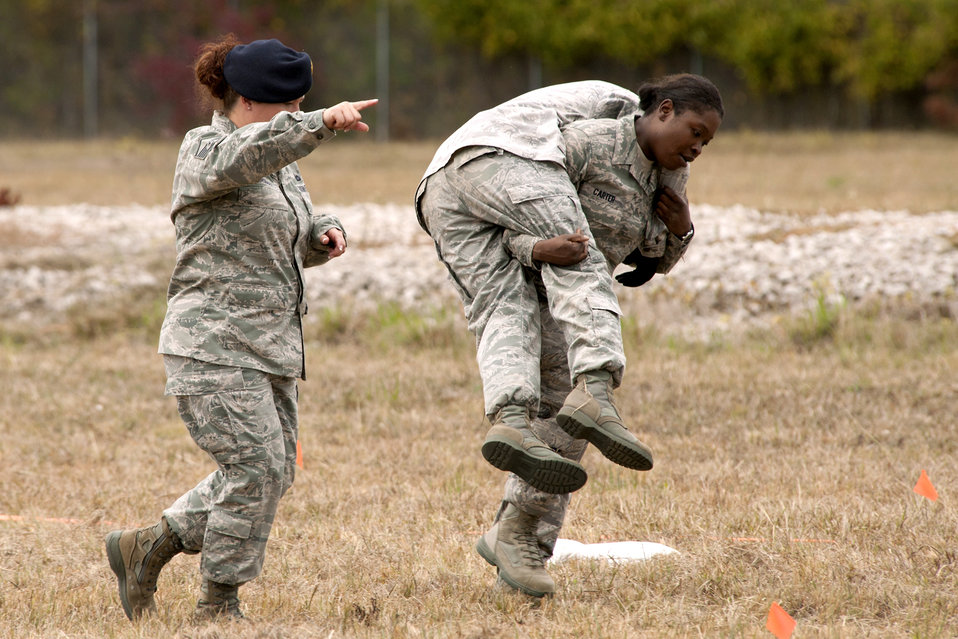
Carrying a little extra weight

Airman 1st Class Nikili Carter, of the 307th Security Forces Squadron, uses the fireman carry technique on a teammate during the mental and physical competition during Global Strike Challenge 2011 at Barksdale Air Force Base, La., Nov. 7, 2011. Teams competing in the event were not allowed to know the details of the competition, which included grueling physical and logic scenarios.